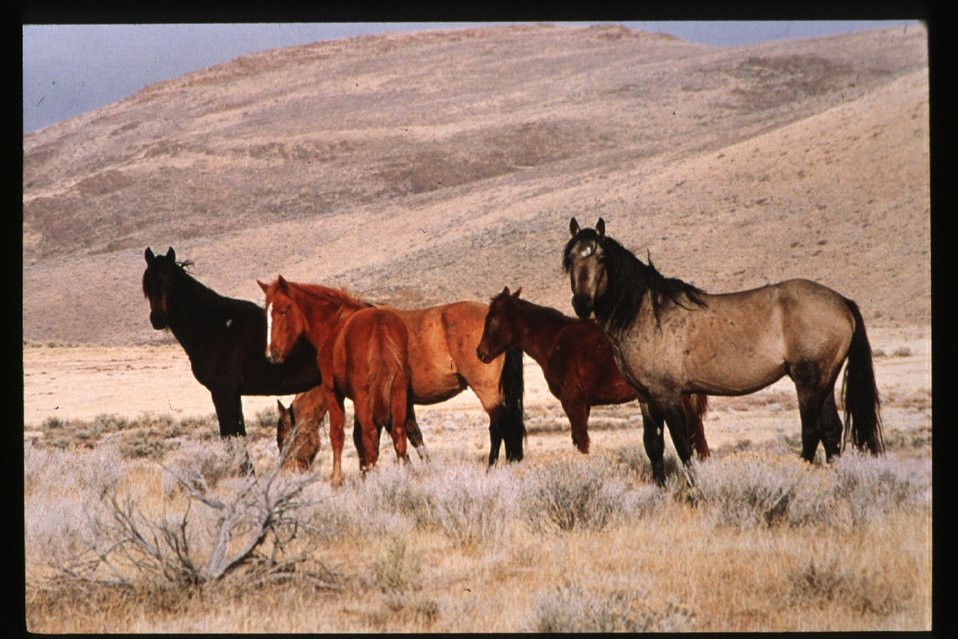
Wild horse and burro Corral roundup WHB LSRD Lower Snake River District